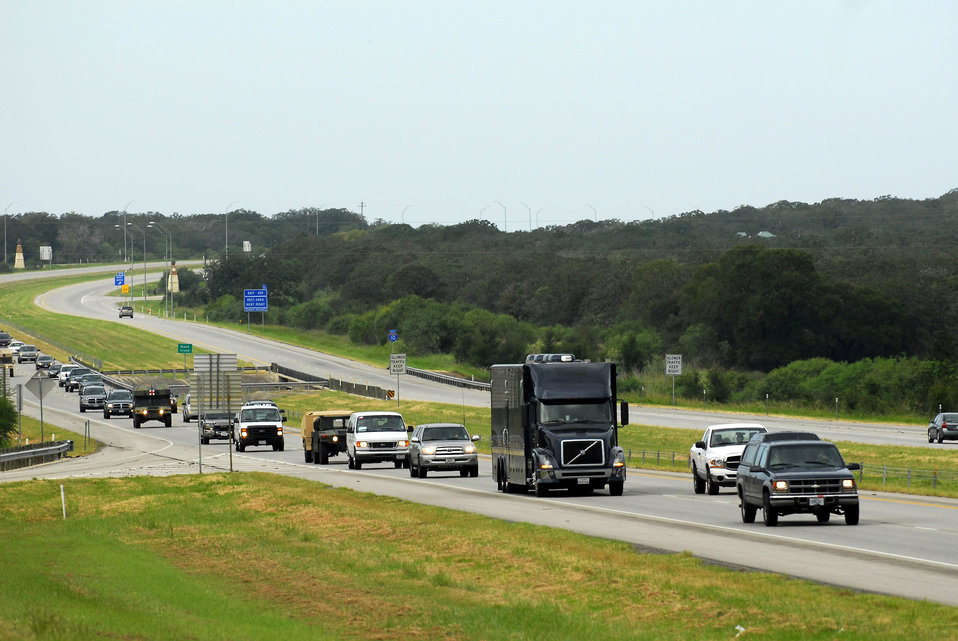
Convoy: Help is on the way!

Military forces and representatives of agencies from throughout Texas and the U.S. gathered in San Antonio and then convoyed east. More than 500 vehicles and 1,000 people headed to various locations in Southeast Texas to begin search and rescue and recovery efforts in the aftermath of Hurricane Ike.